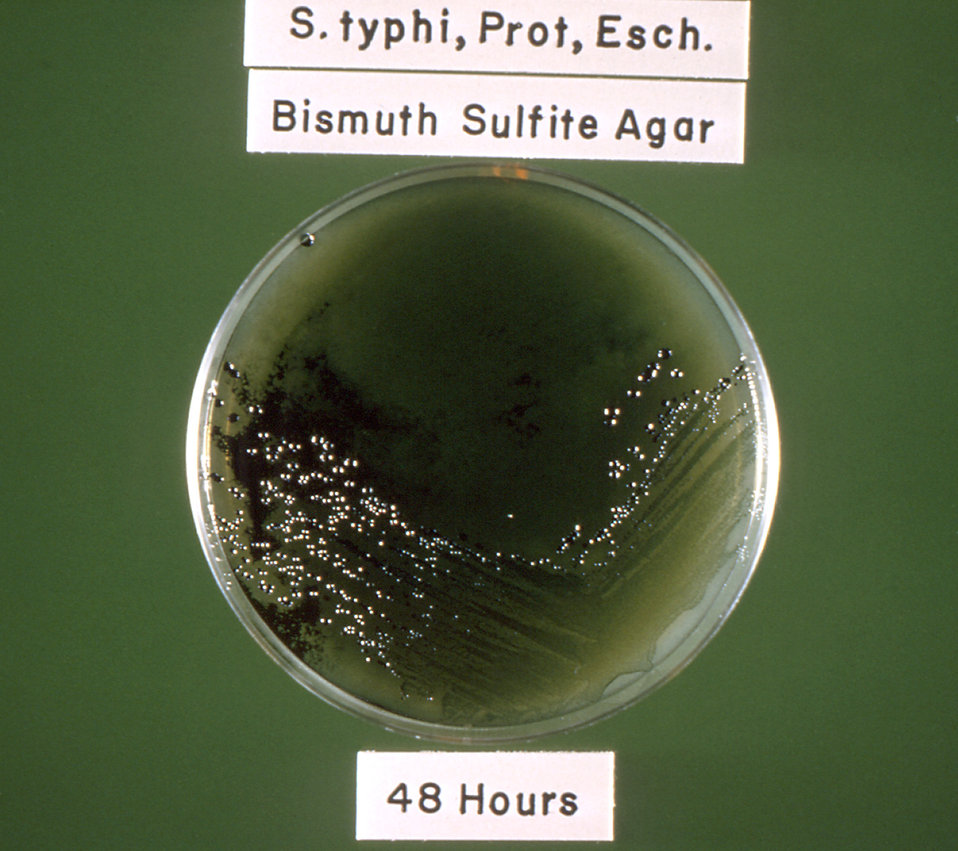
Here, S. typhi, E. coli, and Proteus sp. bacteria are cultured on bismuth sulfite agar; 48hrs incubation.